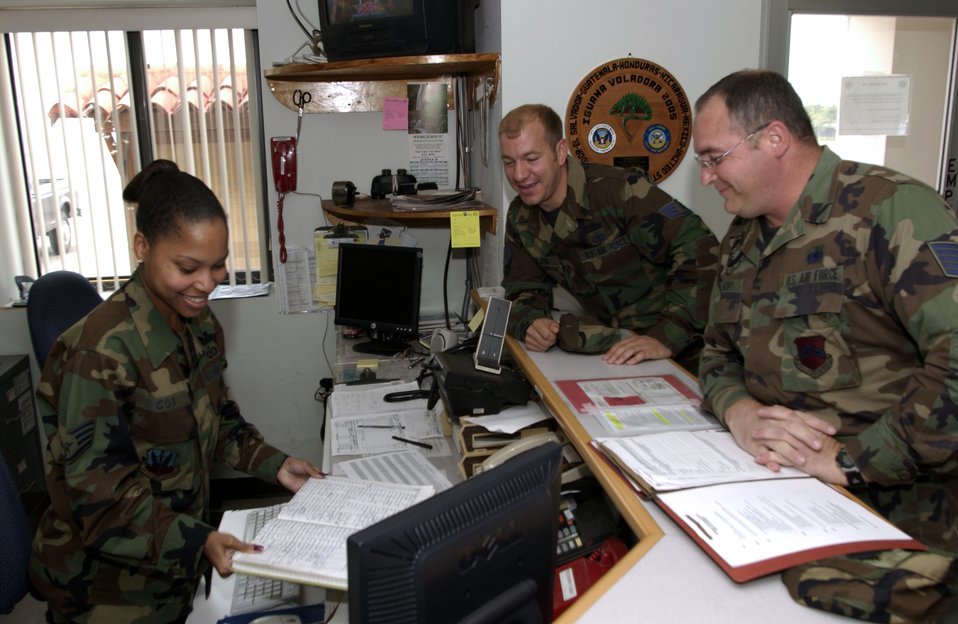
Airmen keep Soto Cano's runway running

SOTO CANO AIR BASE, Honduras -- Staff Sgt. Michelle Cox processes a line badge for Tech Sgt. Marc Henry (right). Sergeant Henry, a reservist on a 120-day deployment to the base, is replacing Staff Sgt. Charles Wilson (center) at Joint Task Force-Bravo. Sergeant Cox is the airfield management training chief here.